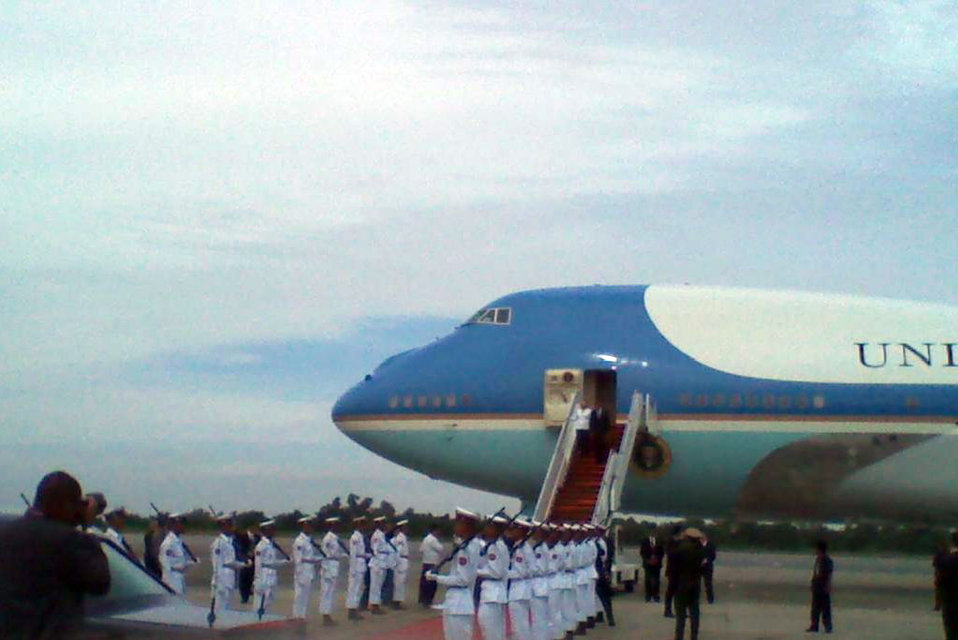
President Obama and Secretary Clinton Arrive in Burma

U.S. President Barack Obama and U.S. Secretary of State Hillary Rodham Clinton wave upon landing in Rangoon, Burma, November 19, 2012.